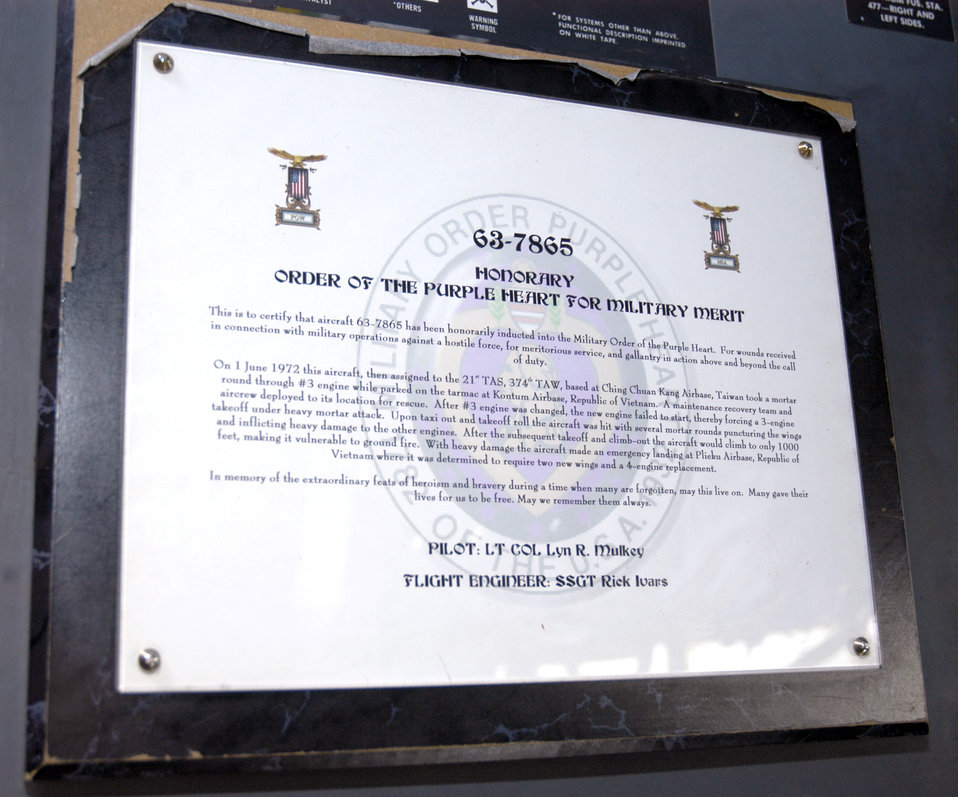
Decorated Vietnam vet back at war

Aircraft 63-7865, a C-130 Hercules deployed from Ramstein Air Base, Germany, has a plaque telling its story of being a Purple Heart recipient. The C-130 is deployed to a forward operating base in Southwest Asia.